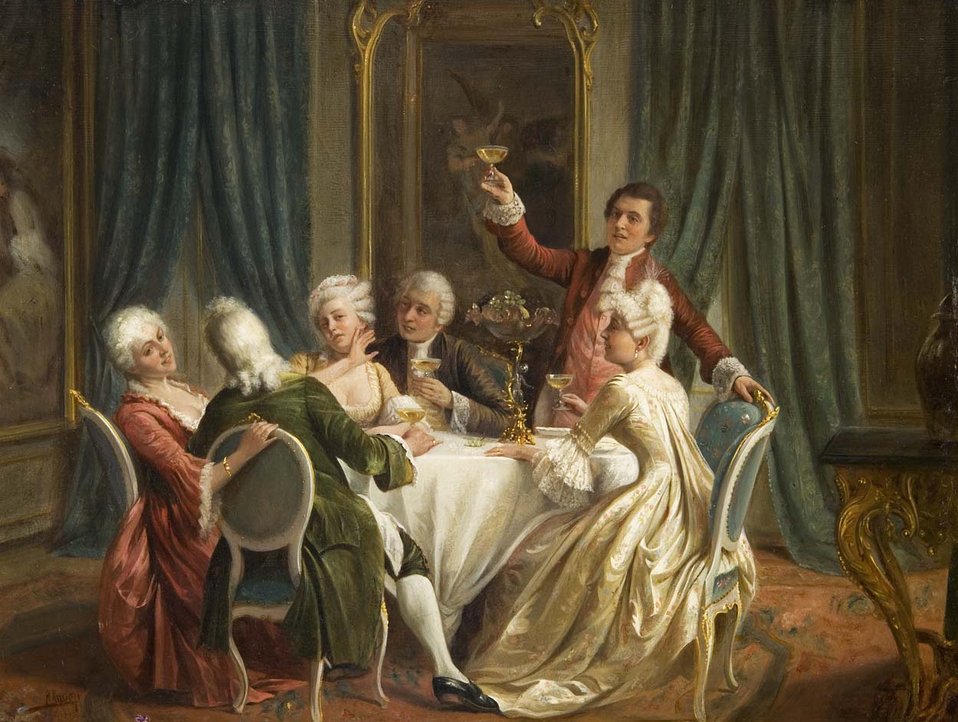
A toast